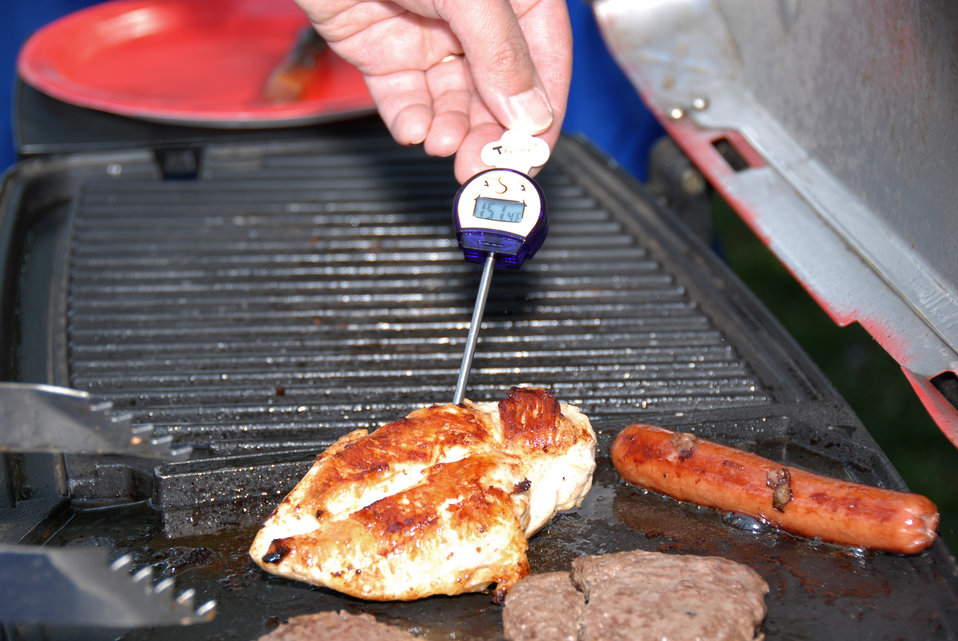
U.S. Department of Agriculture's (USDA) Food Safety and Inspection Service (FSIS) annually hosts a food safety camp that provides children with hands-on instruction about the dangers of foodborne illness and how to prevent it. This Food Safety camp was held at the USDA Beltsville, Maryland facility on May 23, 2007. The students learned the best method to ensure that grilled hamburgers and barbecued chicken are cooked to a safe minimum internal temperature that destroys bacteria and is safe to eat is by using a food thermometer.